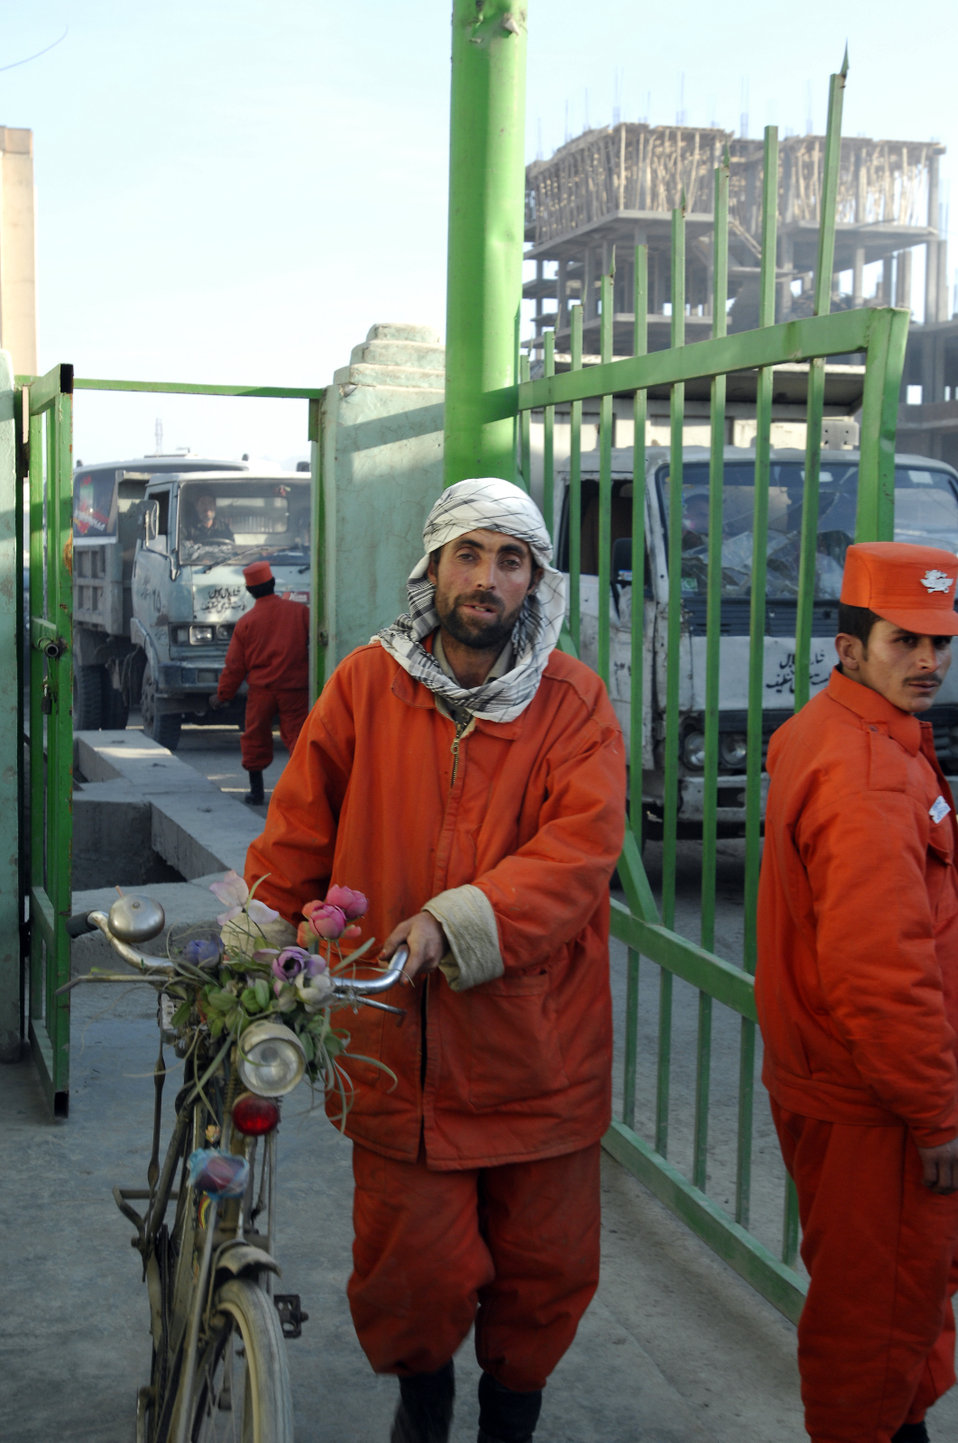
Care63